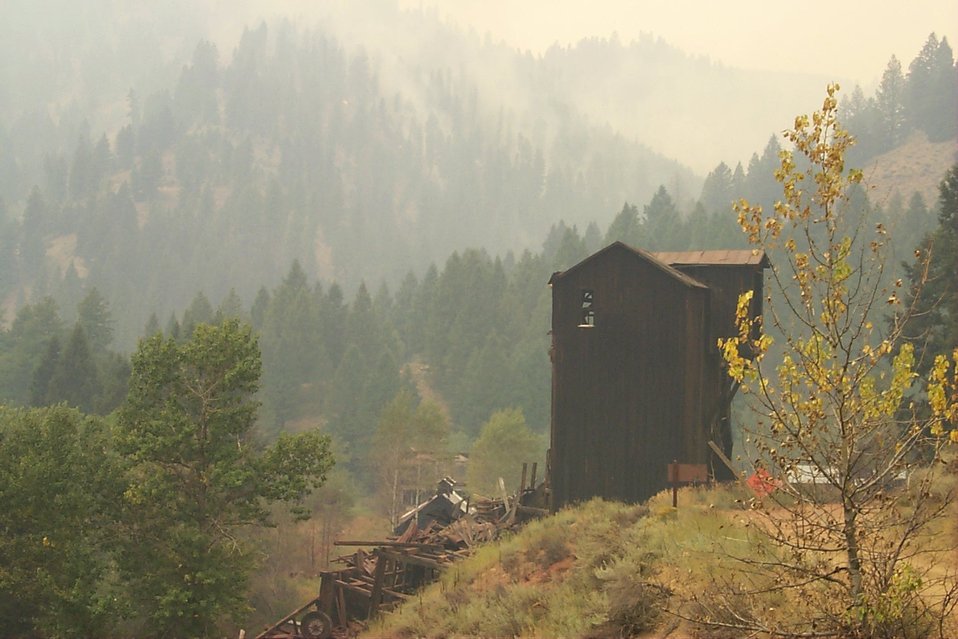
Urban interface Fire Clearwater Fire Salmon Field Office USRD Upper Snake River District